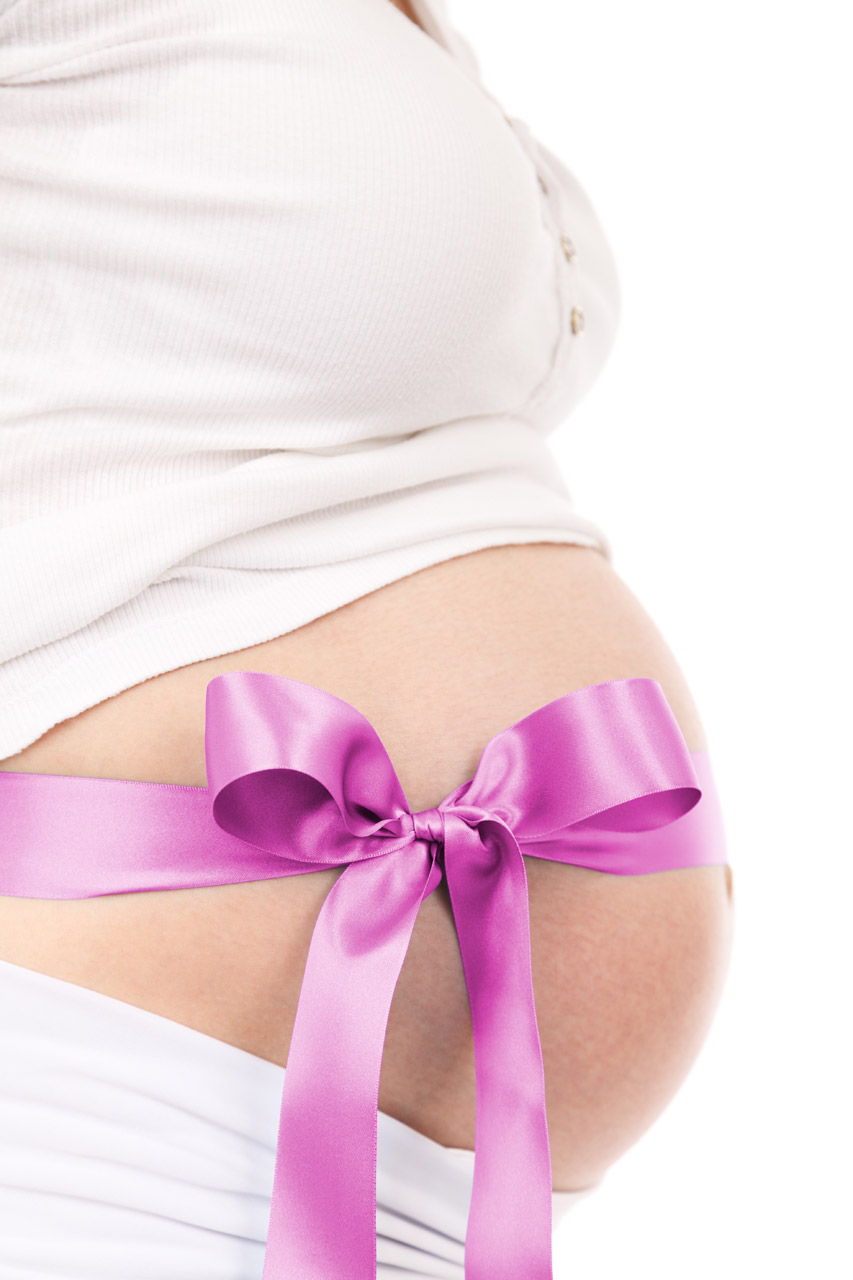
Pink ribbon on a belly

Expecting a baby girl.